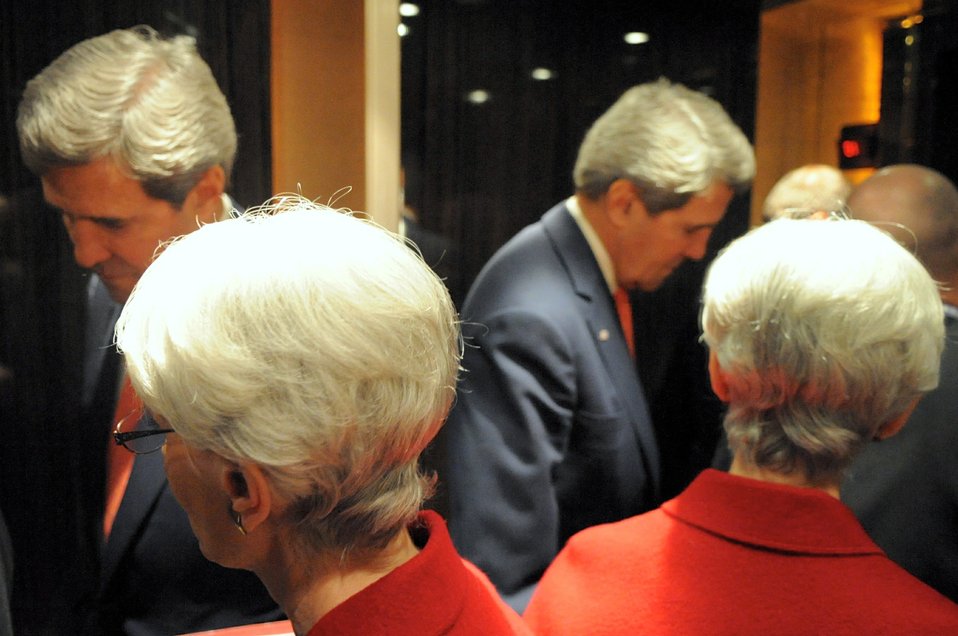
Secretary Kerry, Under Secretary Sherman Shuttle Between Geneva Meetings

In a mirror-lined elevator, U.S. Secretary of State John Kerry and Under Secretary for Political Affairs Wendy Sherman shuttle between meetings in Geneva, Switzerland, on November 9, 2013, as the P5 1 countries negotiate with Iran about its nuclear capabilities. State Department photo/ Public Domain]